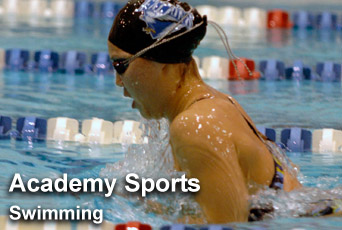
Academy sports: Swimming

For up-to-date scores on all U.S. Air Force Academy sports, visit their Web site at www.goairforcefalcons.com.